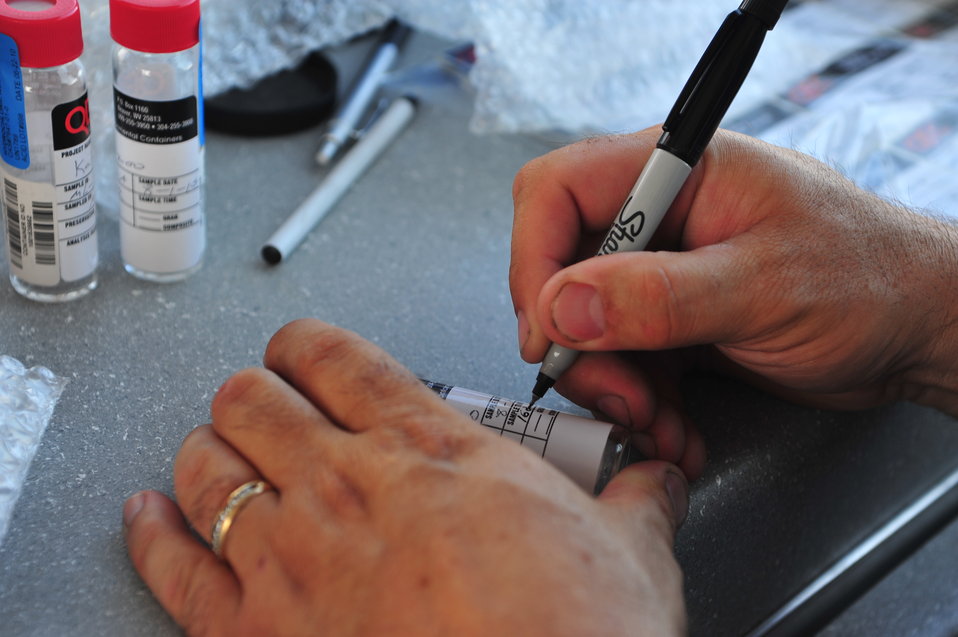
EPA's response to the Enbridge oil spill

August 2, 2010 - Water and sediment sampling operations during Enbridge Spill Response on Morrow Lake near Battle Creek, Michigan from Mudpuppy II, EPA's news research vessel.